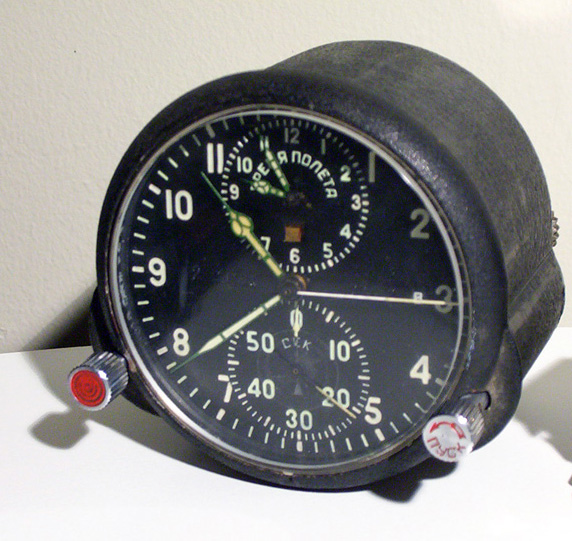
Russian ACS-1 military cockpit chronograph